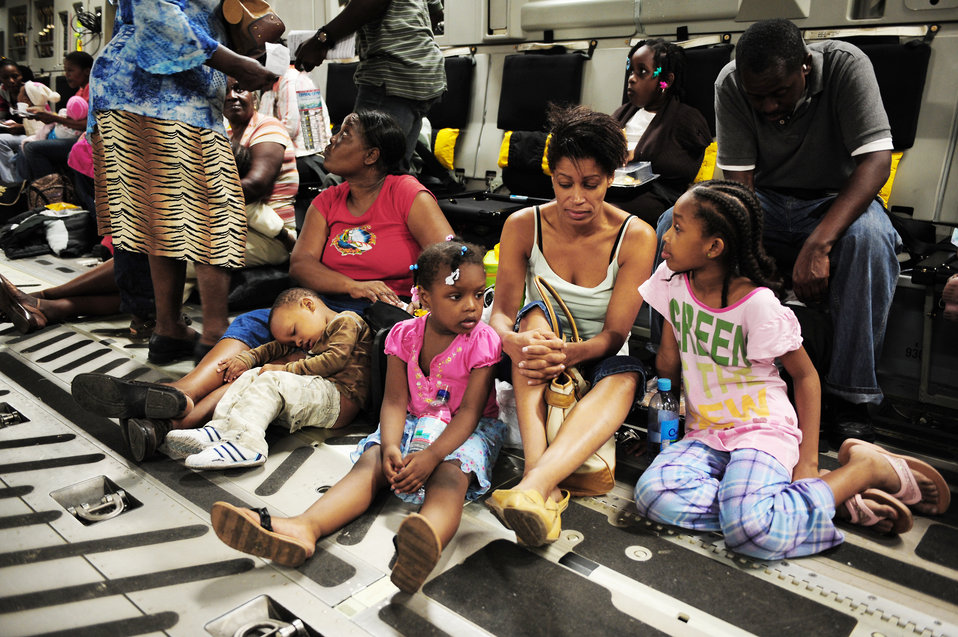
Haiti Earthquake Relief

Haitian-Americans sit onboard a C-17 Globemaster III Jan. 18, 2010, flying from Toussaint L'Ouverture International Airport in Port-au-Prince, Haiti to Orlando Sanford International Airport, Fla. The C-17 crew is assigned to the 729th Airlift Squadron at March Air Reserve Base, Calif. The aircraft is from the 452nd Air Mobility Wing at March ARB.